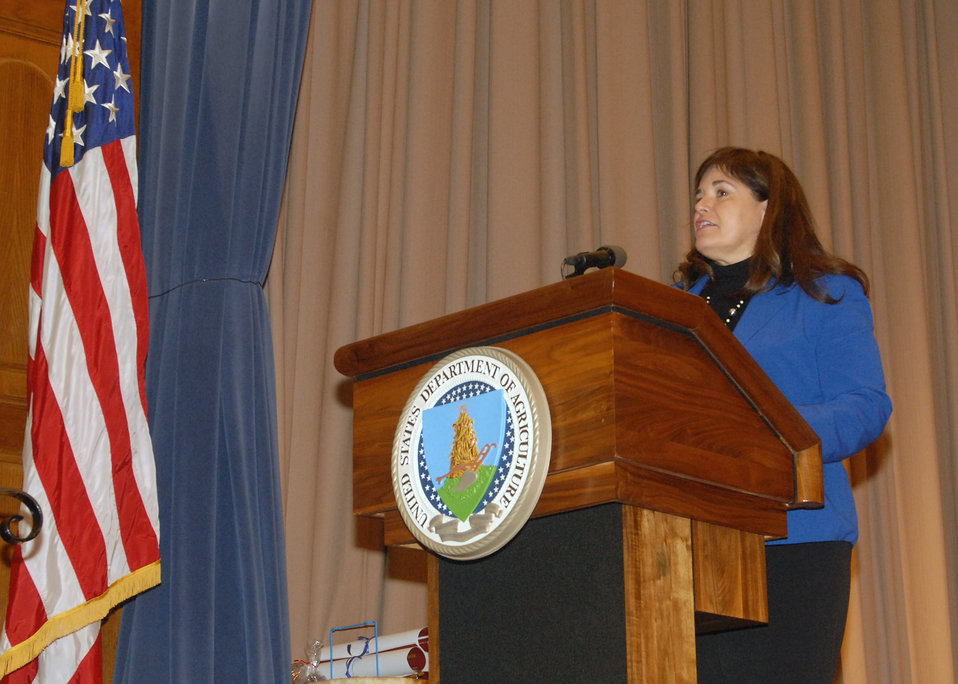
National Congress of American Indians (NCAI) Executive Director Jacqueline Pata is the keynote speaker at the U.S. Department of Agriculture’s (USDA) Native American Heritage Month Observance in the Jefferson Auditorium at the USDA South Building in Washington, D.C. on Tuesday, Nov. 20, 2012. The theme for this year’s observance is “Serving with Honor, Pride, and Devotion: Country, Land and People”.